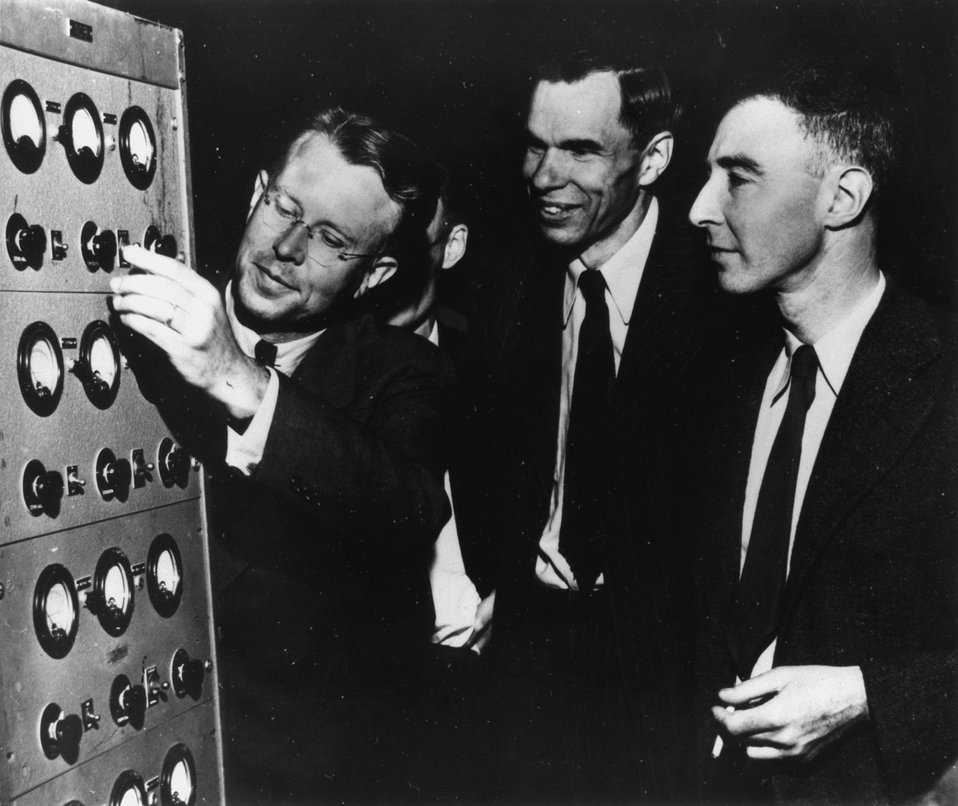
Photograph taken in early 1946 shows (left to right) Dr. Ernest O. Lawrence, Director of the University of California Radiation Laboratory, Dr. Glenn T. Seaborg, head of the Chemistry Division of the Laboratory, and Dr. J. Robert Oppenheimer, a theoretical physicist on the Berkeley facility. c. 1946